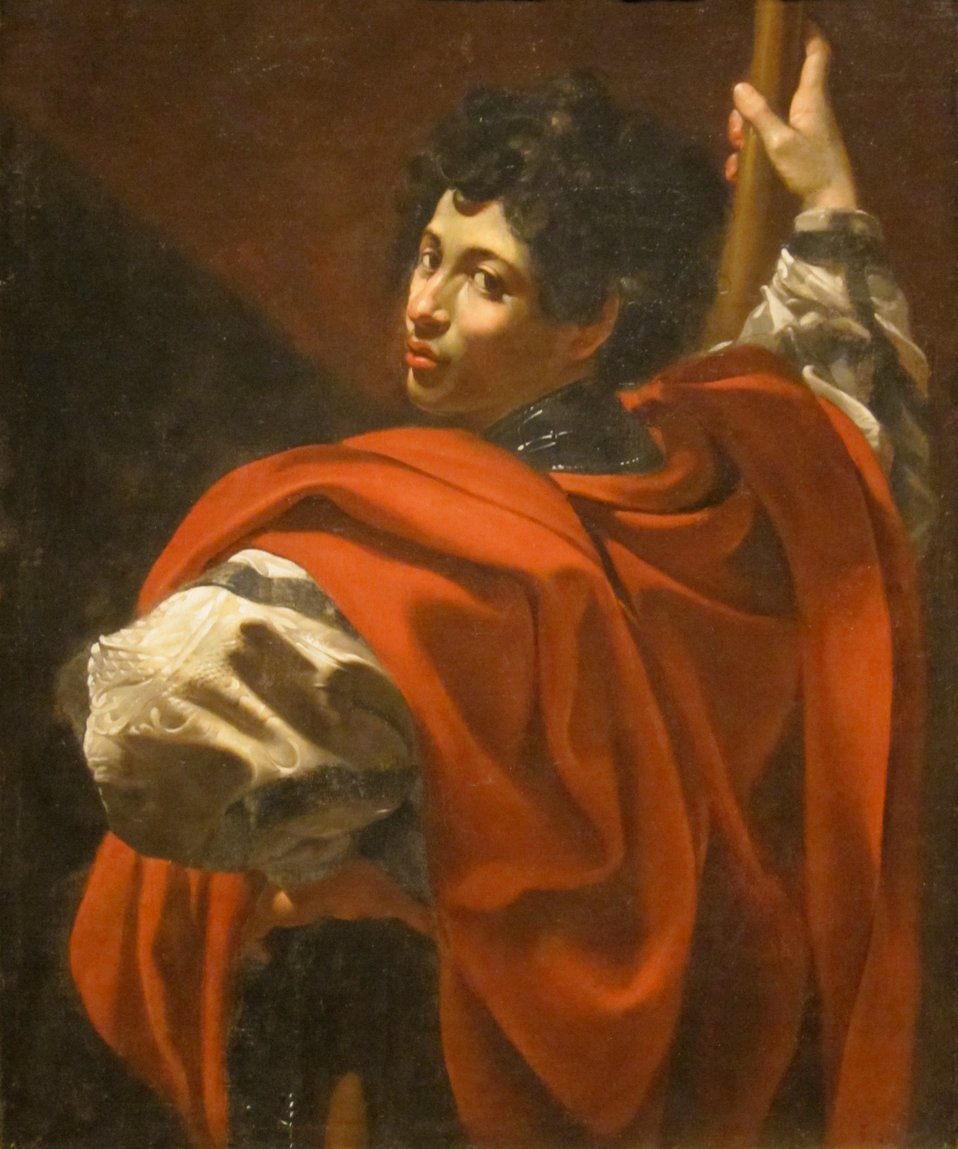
The Halberdier, oil on canvas painting by Simon Vouet, c. 1615-20, Dayton Art Institute. This painting is very similar to the Vouet in the Louvre identified as Saint Guillaume d'Aquitaine (Saint William of Gellone).